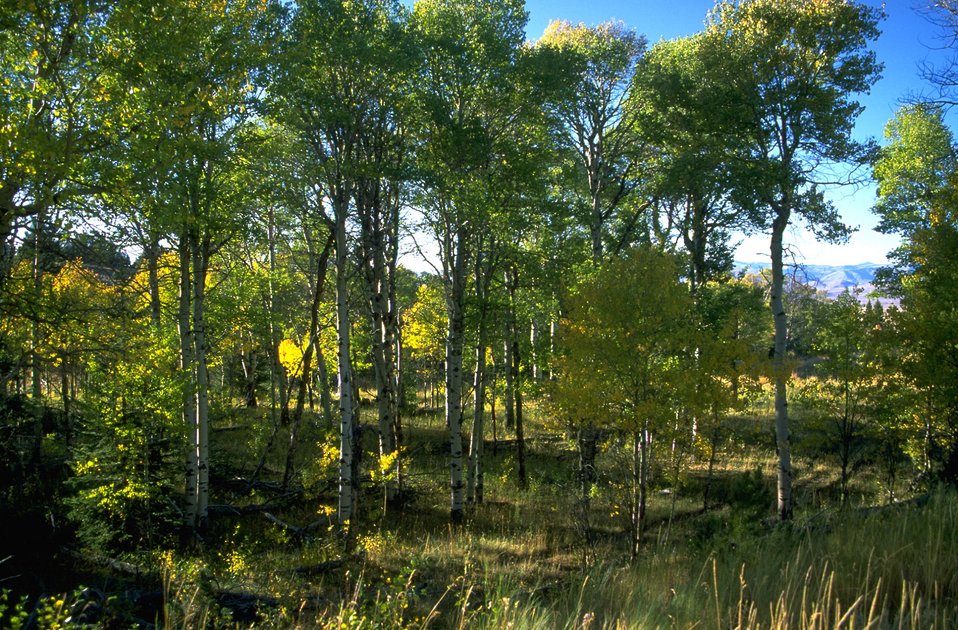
Aspen trees in the Centenial Mountains